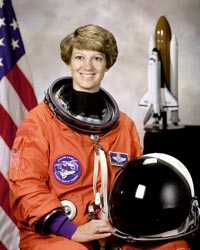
Colonel Eileen M. Collins

1990's -- Col. Eileen M. Collins was the first woman to command the Space Shuttle.